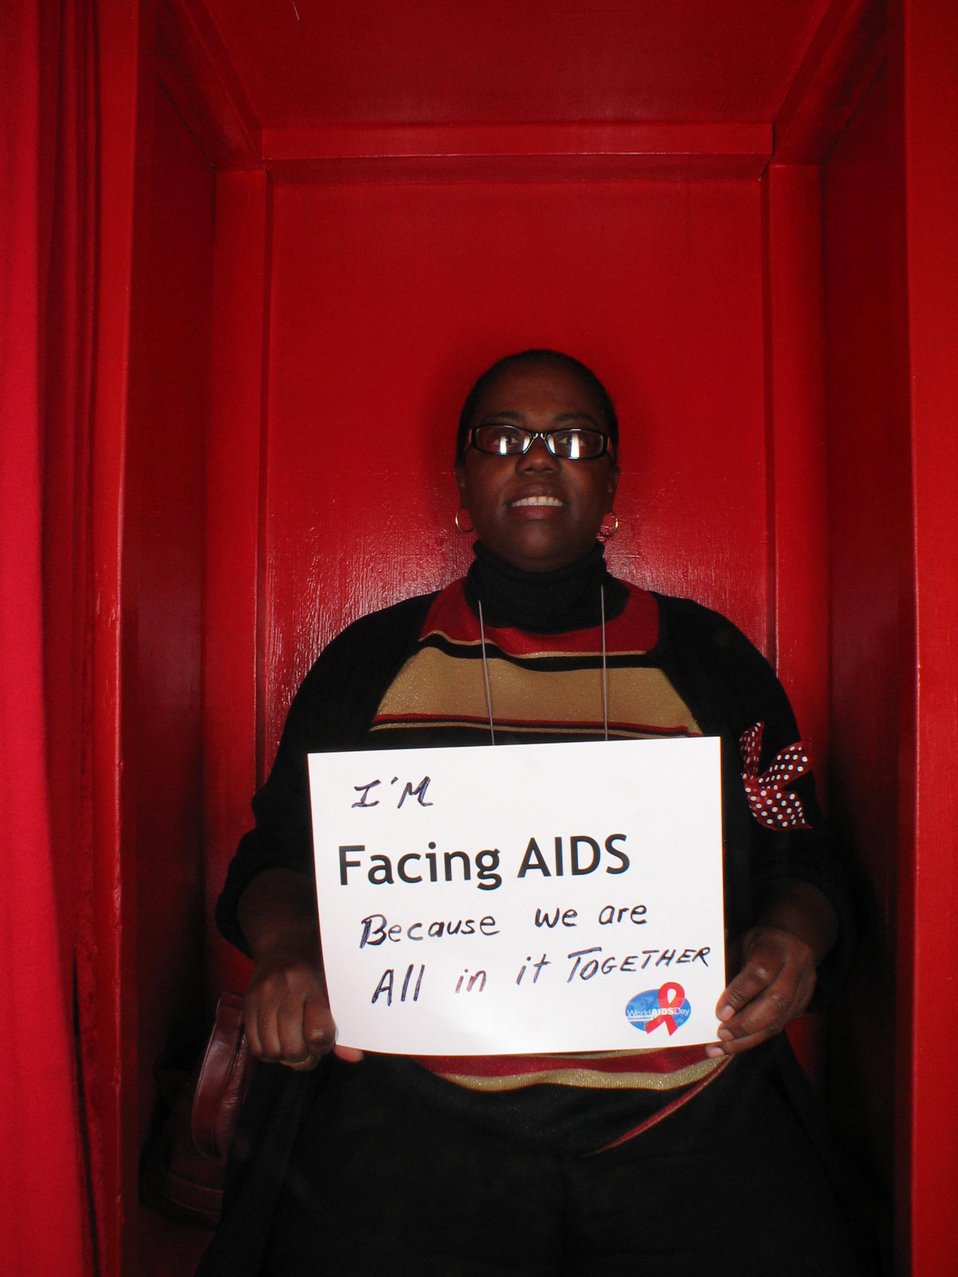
I'm Facing AIDS because we are all in it together